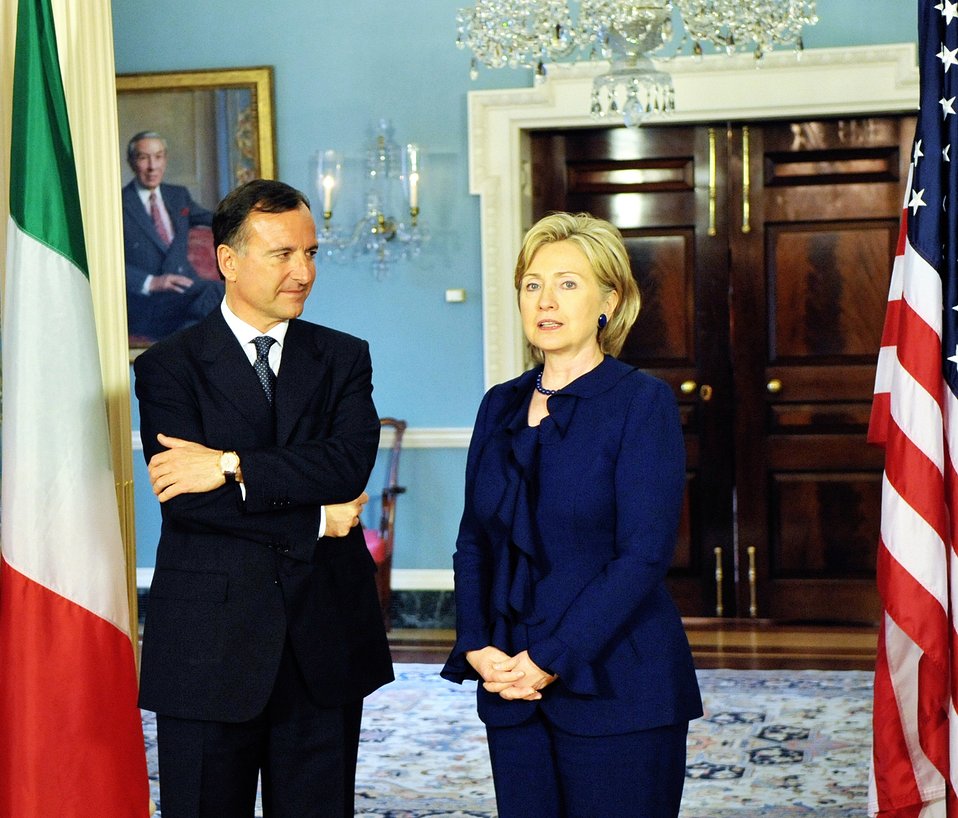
Secretary Clinton Meets With Italian Foreign Minister

U.S. Secretary of State Hillary Rodham Clinton hosts a bilateral meeting with Italian Foreign Minister Franco Frattini in the Treaty Room of the U.S. Department of State in Washington, DC May 7, 2009.